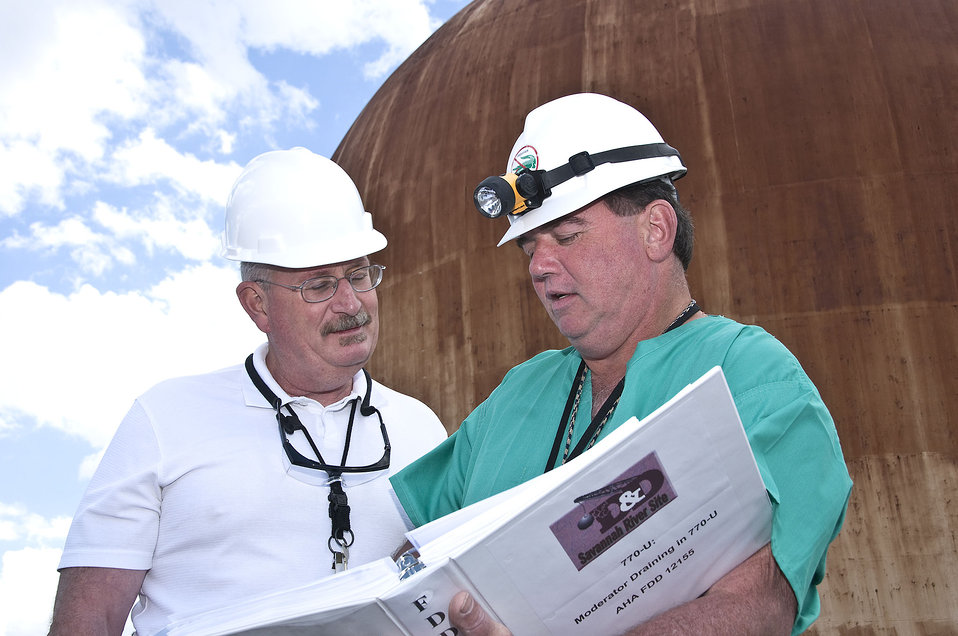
Significant Closure Activities Started at 50-Year-Old HWCTR

Project Manager Bill Lenartz (left) discusses draining plans with a closure project employee.